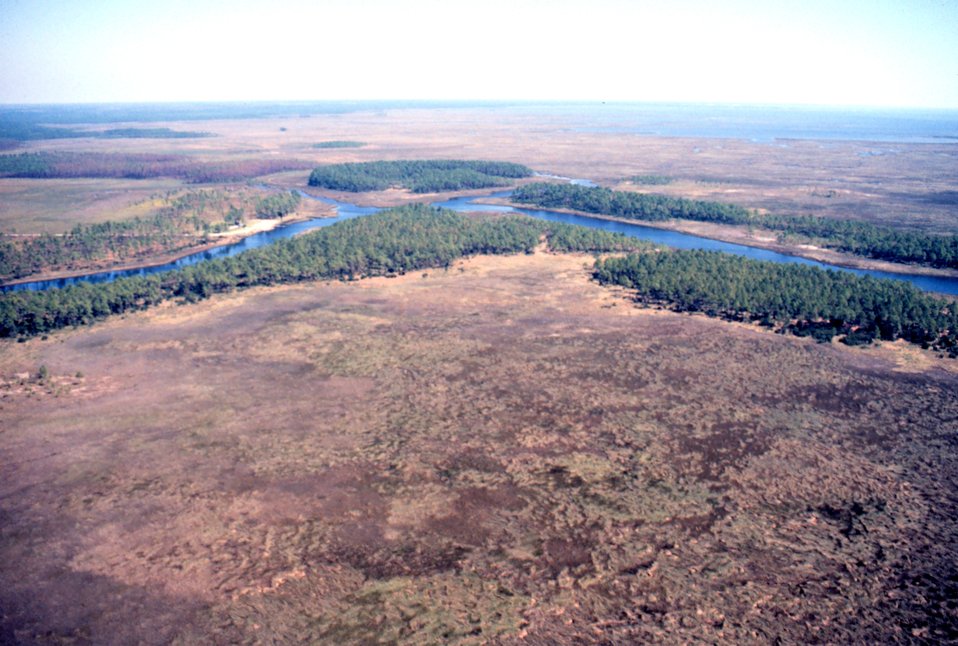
Grand Bay National Estuarine Research Reserve. East showing Bayou Cumbest from northwestern portion of NERR. LSU aerial shoreline survey of October 1998.